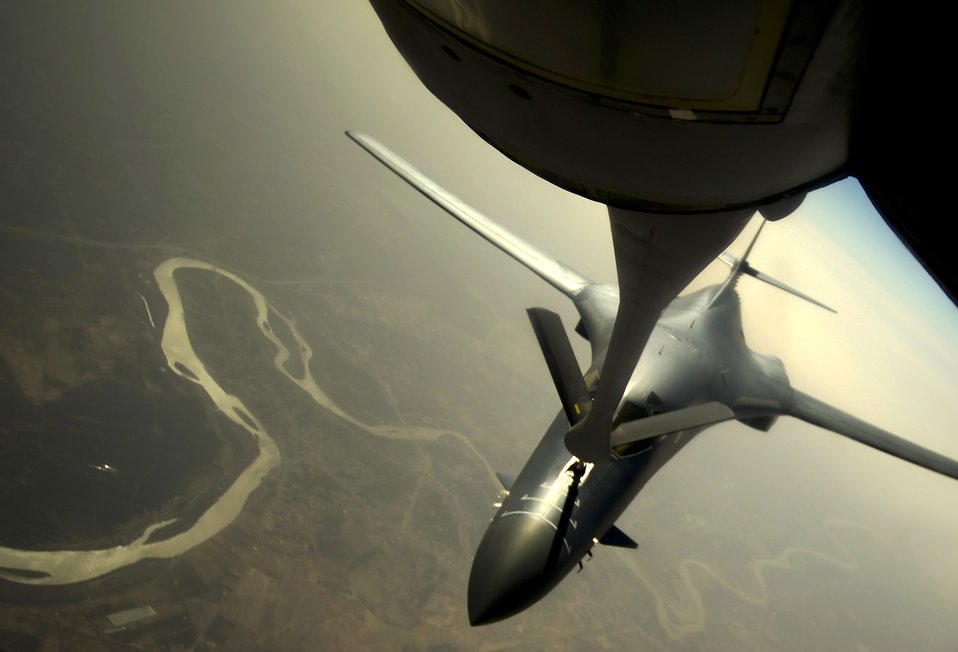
Operation New Dawn

A B-1B Lancer is refueled by a KC-135 Stratotanker Feb 26, 2011, above Iraq, in support of Operation New Dawn.